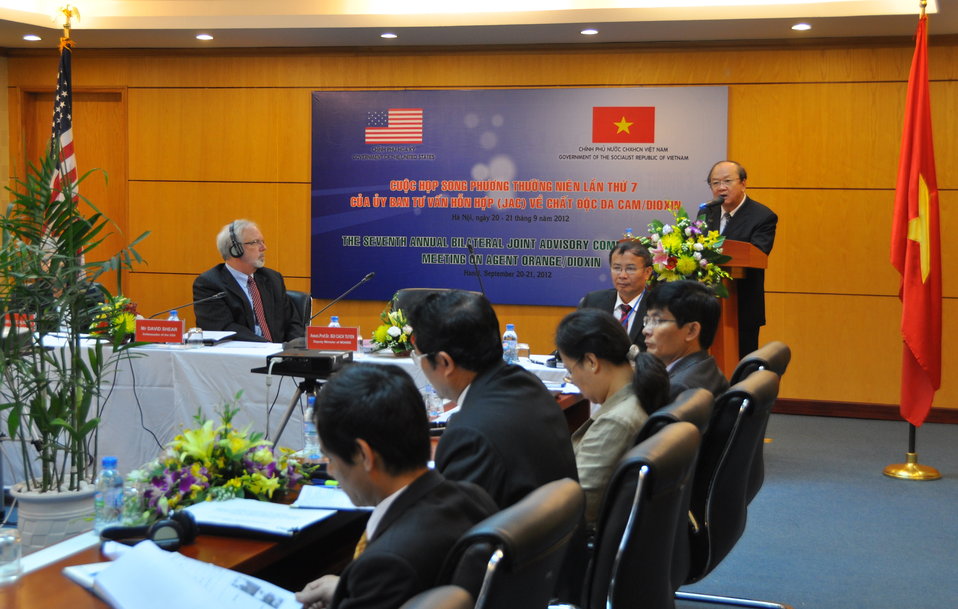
Seventh U.S.-Vietnam Advisory Committee Meeting (JAC)

Hanoi, September 20, 2012